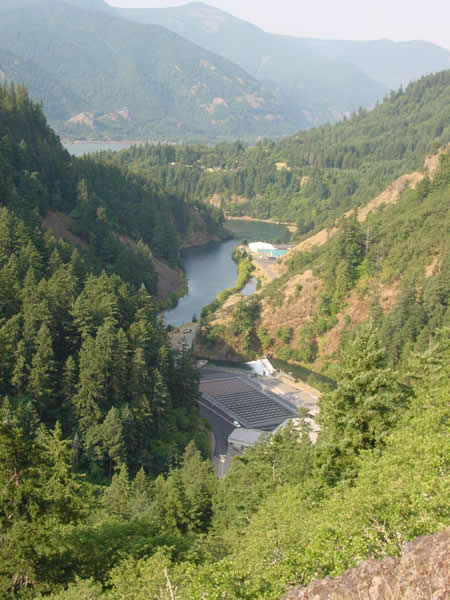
Hillsides surrounding Little White Salmon National Fish Hatchery

A beautiful view of the hillsides surrounding Little White Salmon National Fish Hatchery. The Columbia River in Stevenson, Washington can be seen in the background.